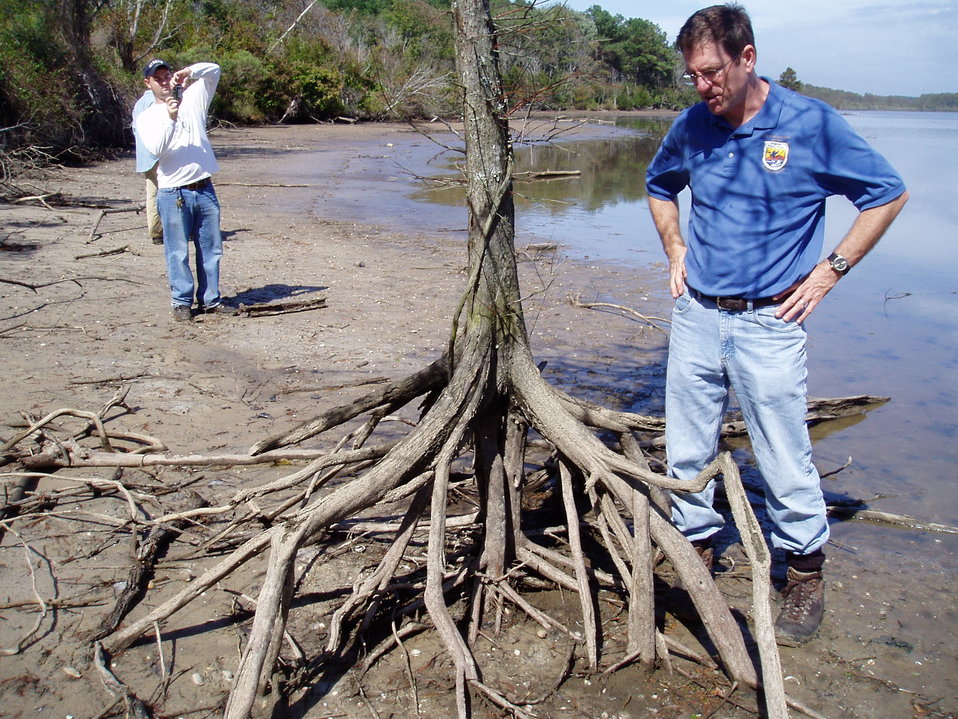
Erosion at Lake Tecumseh

This photo shows the erosion that has occurred at Lake Tecumseh due to the fluctuating water levels during significant wind events.